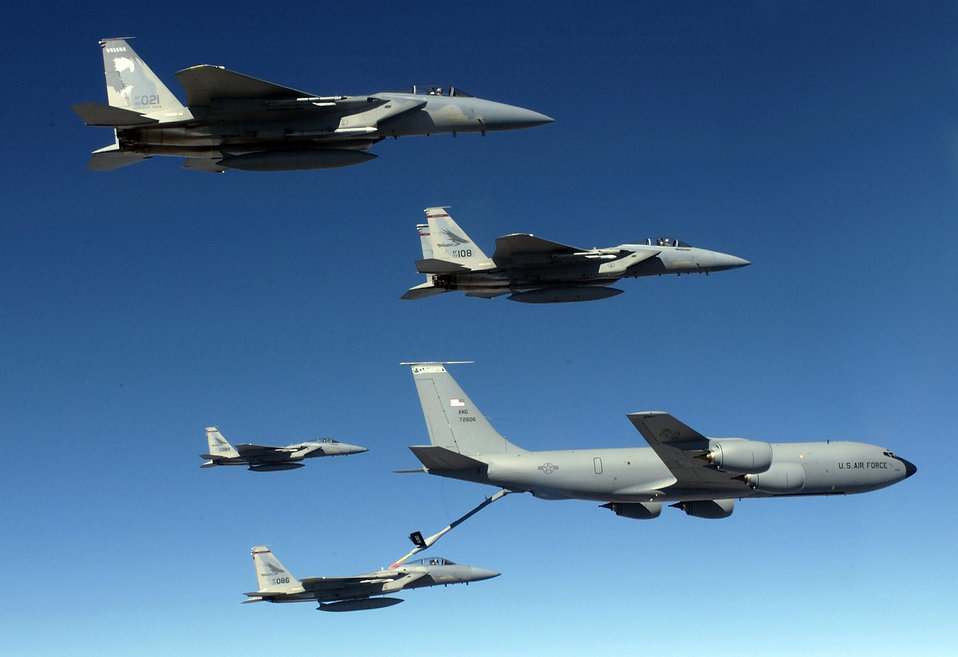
Tanker hits top of the charts for recapitalization priority

Air Force Chief of Staff General T. Michael Moseley has said that the replacement for the KC-135 Stratotanker, shown here refueling F-15 Eagles, has moved up to the top position for procurement priority because of its enabling effect on all other strategic capabilities of the Air Force.